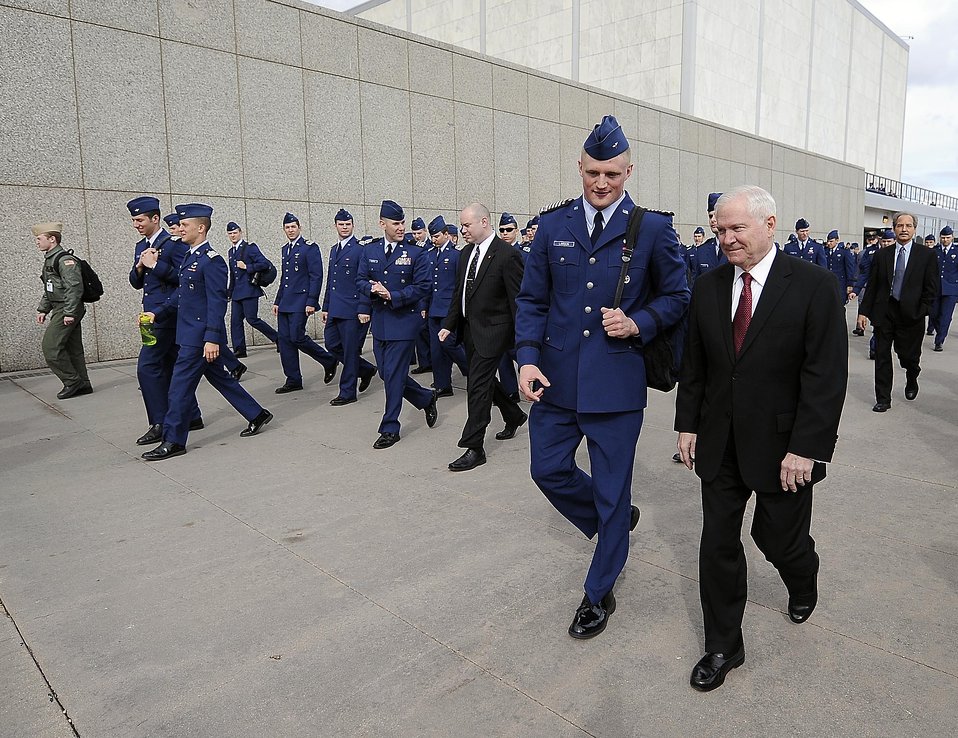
Gates urges new Air Force leaders to think creatively

Defense Secretary Robert M. Gates walks with Air Force Academy Cadet Wing Commander Josh Larson prior to teaching a political science and a national security class March 4, 2011, as part of the Capstone Seminar at the Air Force Academy in Colorado Springs, Colo.